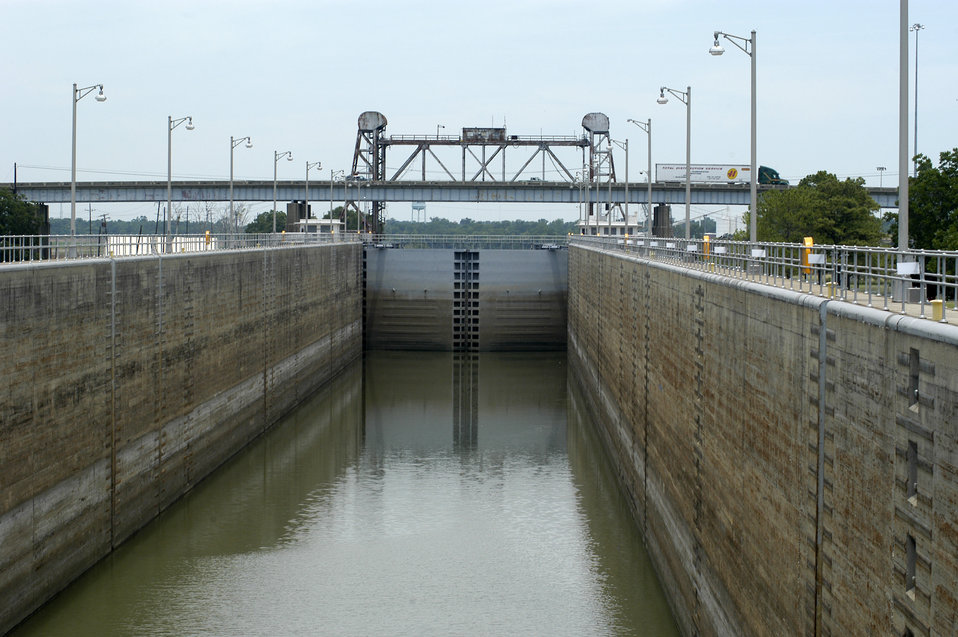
The Port Allen Lock consists of a lock chamber of reinforced concrete U-frame construction, 84 feet wide and 1,202 usable feet long. Miter gates are located at either end of the lock. The Port Allen Lock is located on the west bank of the Mississippi River south of the town of Port Allen, LA and opposite the lower limit of the Port of Baton Rouge.